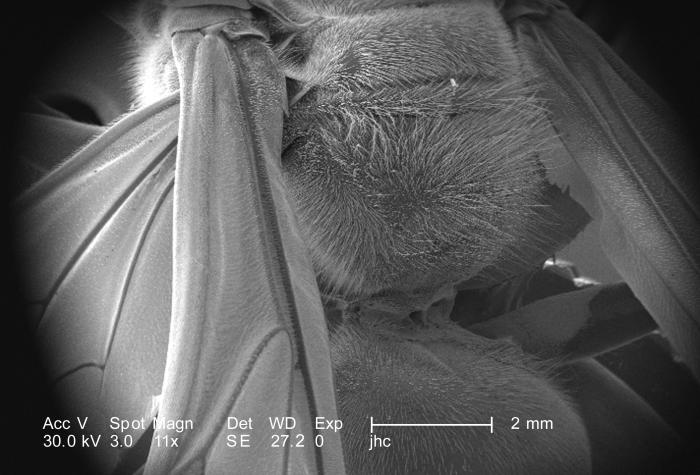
Under a very low magnification of only 11X, this scanning electron micrograph (SEM) depicted some of the morphologic details found on the exoskeletal surface of an unidentified hornet discovered in the suburbs of Decatur, Georgia. In this particular view, which centers on the insect's body where its midsection, or thorax, attaches to its abdomen by the 'petiole', you'll note its two forewings, left hindwing, and sensorial 'hairs' covering almost the entire exterior. Like its exoskeleton, all of these structures are composed of 'chitin'.